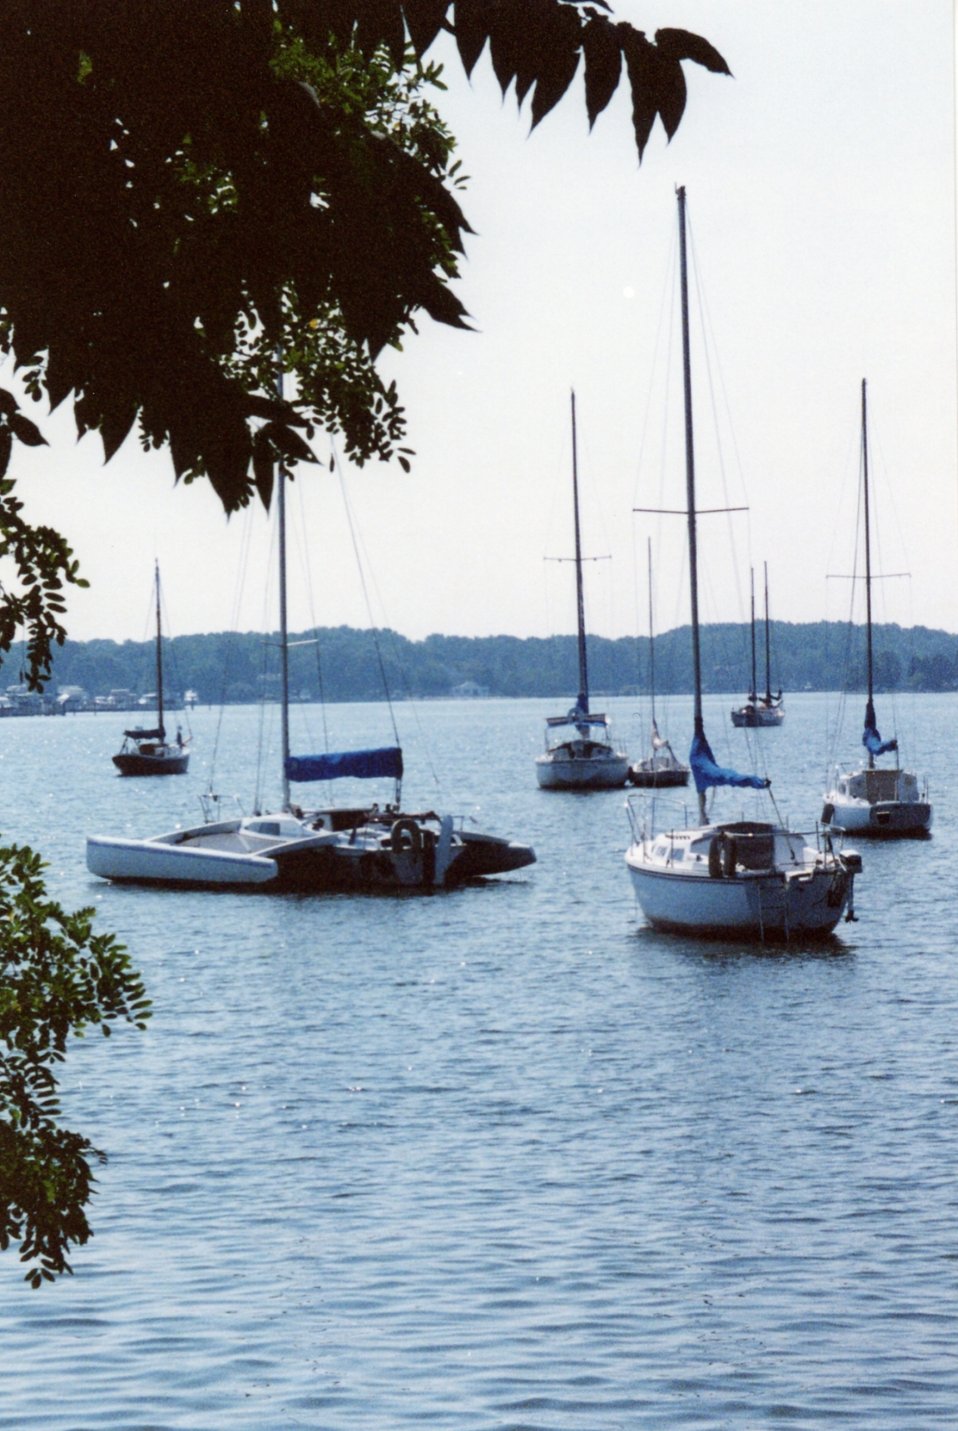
Sailboats moored in the West River.